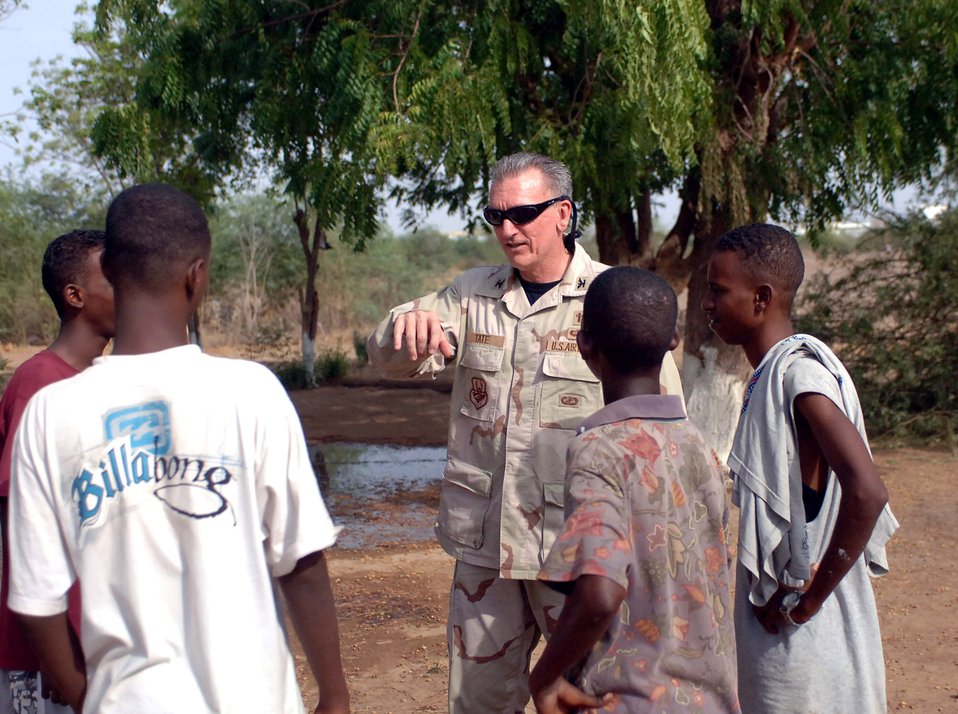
CENTAF chaplain visits Djibouti orphanages

Chaplain (Col.) Gregory Tate talks with teenagers outside of the boys' orphanage July 13 near Camp Lemonier in Djibouti. Chaplain Tate, the U.S. Central Air Forces Command chaplain, visited Djibouti as part of his Central Command area of operation tour, observing Air Force chaplain services and religious support teams.